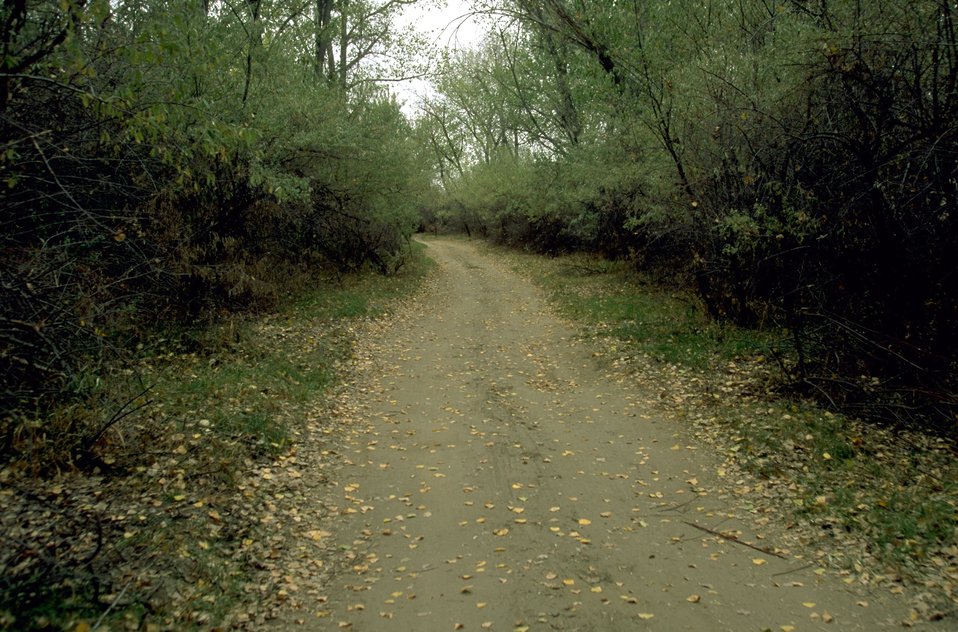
Road leading into the Howrey Island Recreation Area